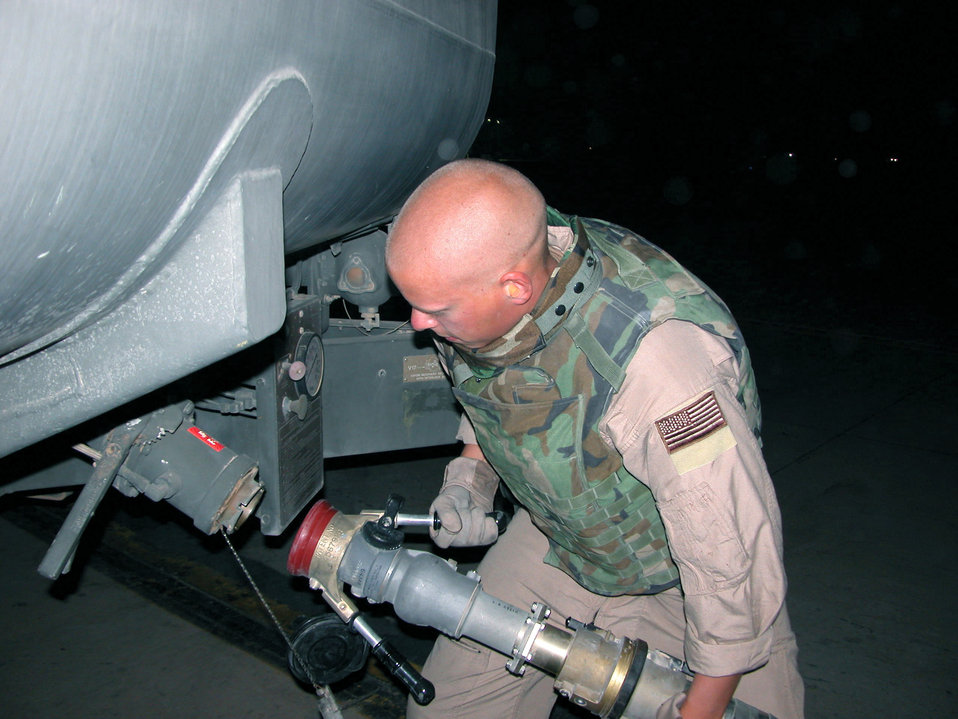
POL Airmen help turn C-130 into flying gas station

SOUTHWEST ASIA -- Senior Airman Pete Kaplan connects a 3-inch hose to a fuel truck before unloading nearly 3,000 gallons of fuel at a forward-deployed location. He is part of a four-person team that flies missions with the aerial bulk fuel delivery system. The system turns cargo aircraft into mobile gas stations, capable of delivering fuel to any location in the area of responsibility. Airman Kaplan is from Elmendorf Air Force Base, Alaska.